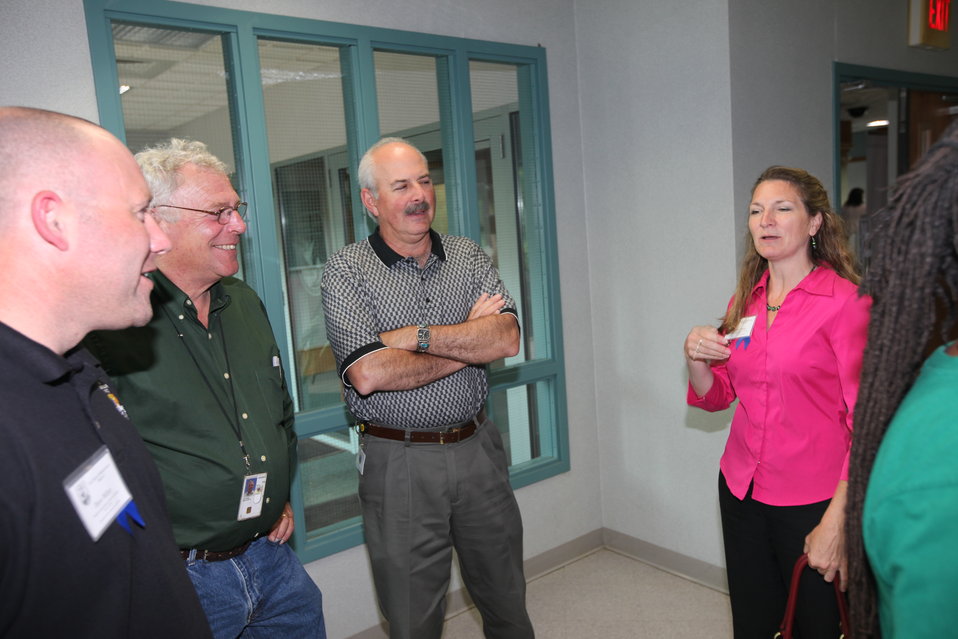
Northeast Region Employee Appreciation Awards

Luncheon